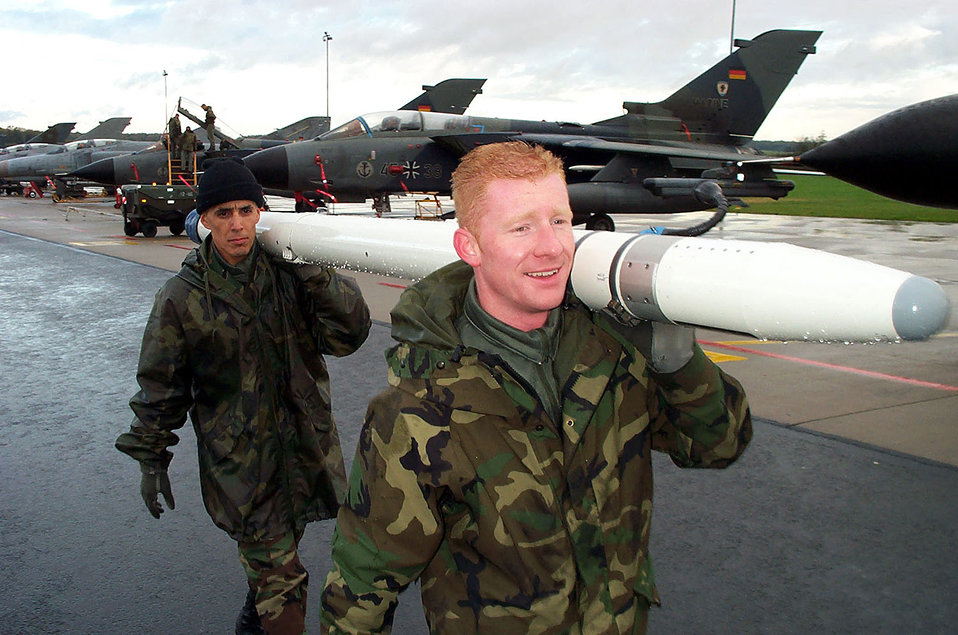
Pods

ROYAL AIR FORCE STATION LAKENHEATH, England -- Staff Sgt. Antonio Luna and Airman 1st Class Tom Litteer, both from 492nd Fighter Squadron here, carry an F-15E Strike Eagle ACM pod back to the maintenance hangar. The pod is used for flight training data. In the aftermath of the Sept. 11 terrorist attacks on the United States, NATO invoked Article 5, declaring an attack on one member nation an attack on all 19 in the alliance. The declaration opened the door for a military response from NATO, which has already dispatched airborne warning and control aircraft to patrol U.S. skies.